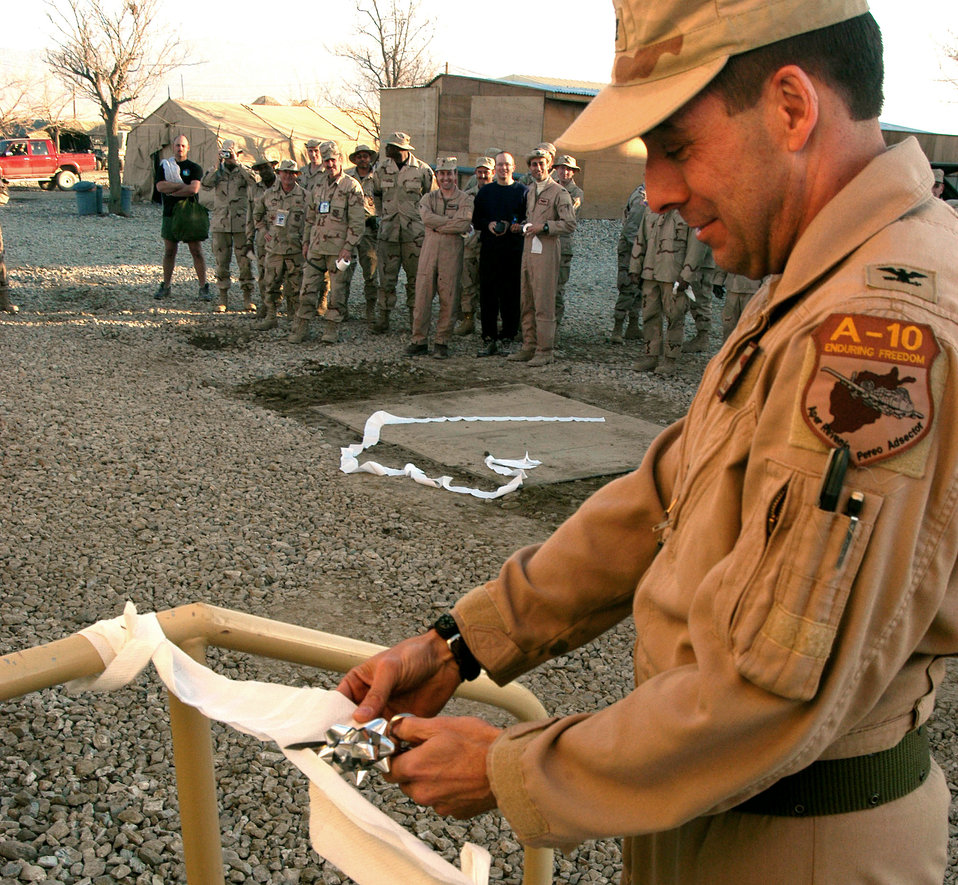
Mushy for a flushy

OPERATION ENDURING FREEDOM (AFPN) -- Col. Gregory Marston, 455th Expeditionary Operations Group commander, cuts a toilet-paper ribbon at Air Force Village at Bagram Air Base, Afghanistan. The paper-cutting ceremony honored the grand opening of two trailers with interior toilet facilities, plumbing, heating and air conditioning. The toilet trailers affectionately known as